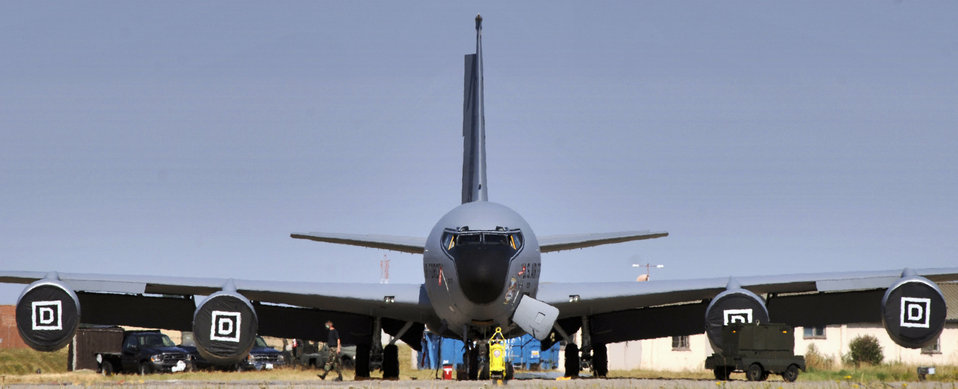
Mildenhall's tanker services in high demand

Staff Sgt. Craig Lambert checks the flaps on a KC-135 Stratotanker during a preflight inspection at Royal Air Force Mildenhall, England, on July 24. The sergeant is with the 100th Aircraft Maintenance Squadron. Squadron maintainers work 12-hour shifts to ensure that the nearly 50-year-old aerial refueling tankers are ready to fly.